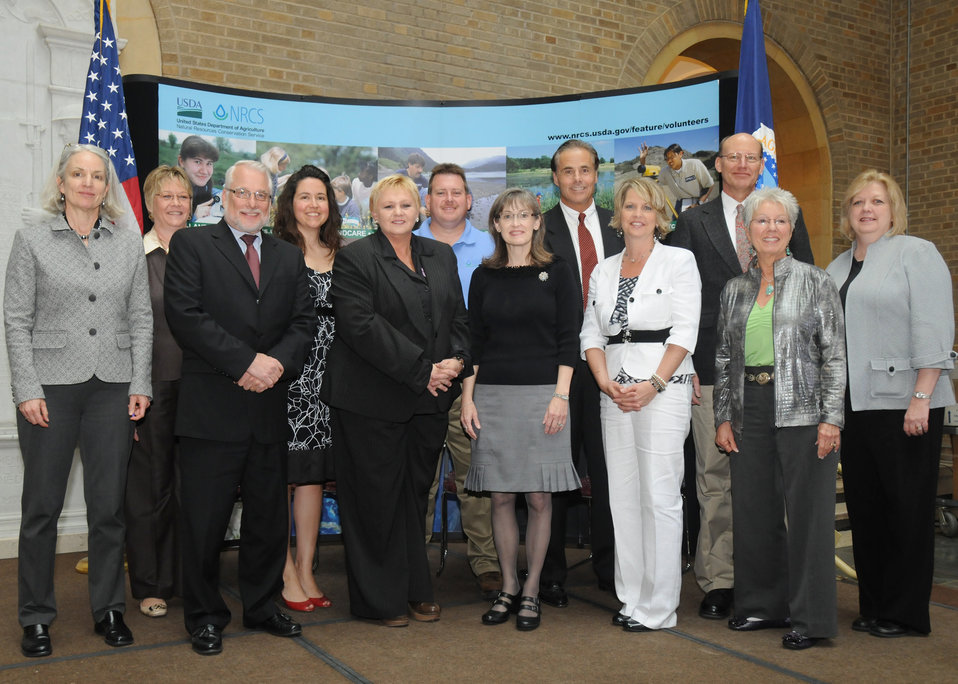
The National Earth Team volunteers with guest speakers at the National Earth Team ceremony held at the U.S. Department of Agriculture in Washington, D.C., on Monday, April 26, 2010. (Standing L to R Natural Resources Conservation Service (NRCS) Deputy Under Secretary Ann Mills, NRCS National Volunteer Coordinator Michele Eginoire, NRCS Chief Dave White, Volunteer Coordinator Award Joanna Pope, Nebraska, Group Volunteer Award “Fast Food Farm” District Secretary New River SWCD-Donaldson Field Office Gayle Roussel, Louisiana, Chief’s Field Award District Conservationist Kelly Shrable, Arkansas, NRCS Employee Award Mary Giles, Missouri, Special Recognition Award Richard Casale, California, Volunteer Service Award-Chief’s Cup State Volunteer Coordinator Jan Klaus, Kansas, Individual Volunteer Award District Conservationist Dean Moberg, Oregon, First NRCS National Earth Team Coordinator Judy Johnson, and NRCS National Volunteer Liaison Bonnie Allely) USDA photo 10di1328-91